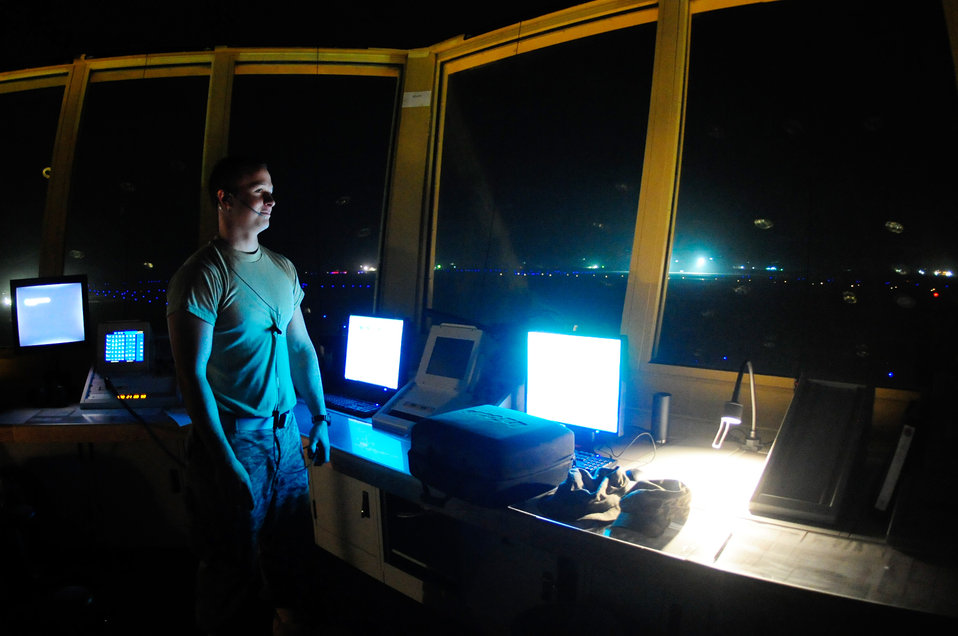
ATC tower opens

Senior Airman Michael Coyne begins transmission for the first time from the new air traffic control tower March 12, 2010, at Ali Base, Iraq. Airmen Coyne is an air traffic controller from the 407 Expeditionary Operations Support Squadron, deployed from 19th Operational Support Squadron, Little Rock, Ark.